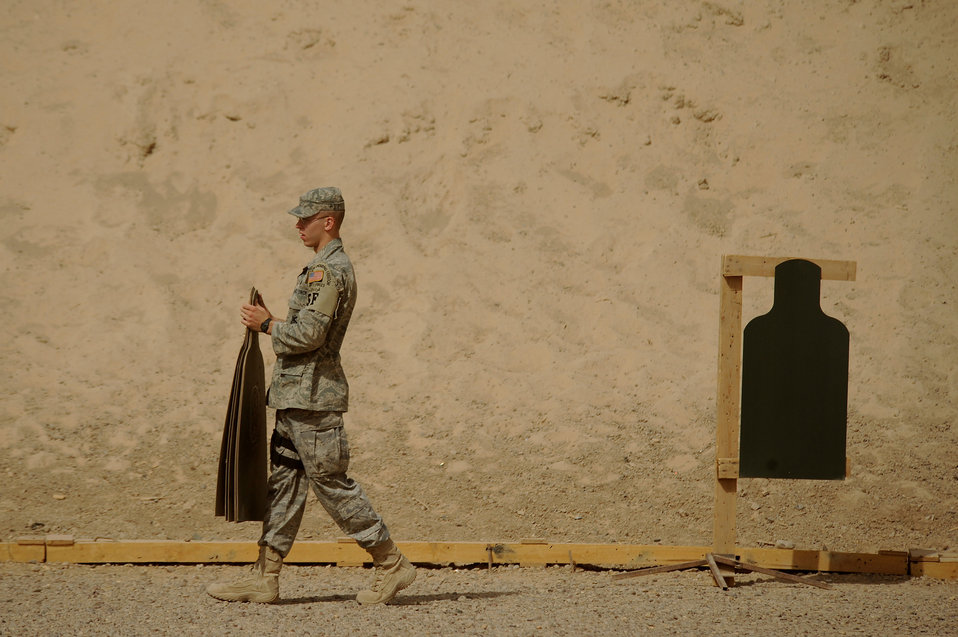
Sather Airmen make each shot count

Senior Airman Kyle Brabb sets up targets at a range June 18 near Sather Air Base, Iraq. Airman Brabb is assigned to the 447th Expeditionary Security Forces Squadron deployed from the 109th Air Refueling Wing Security Forces Squadron from Topeka, Kan.